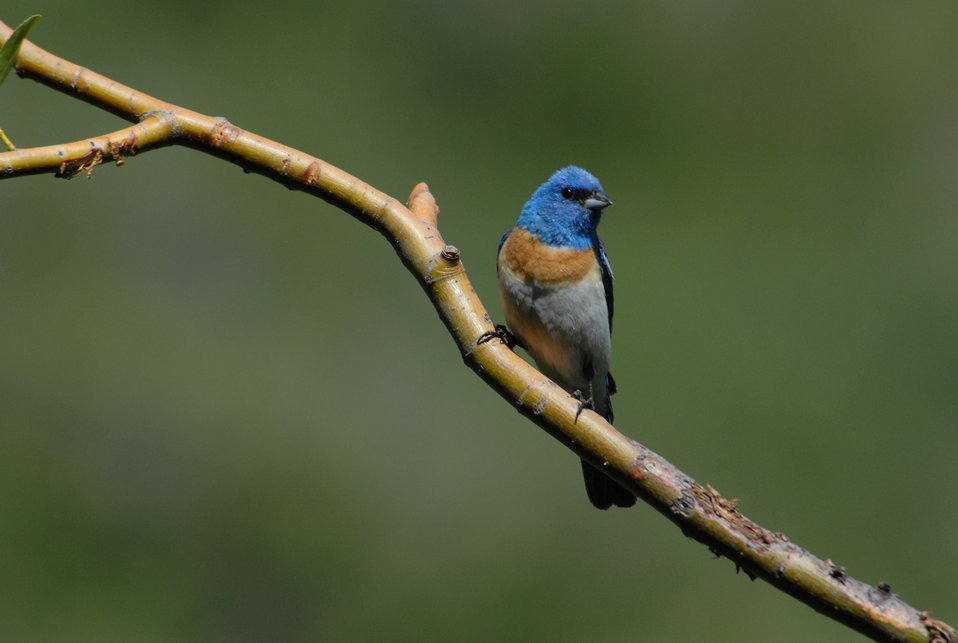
Lazuli Bunting

Male Lazuli Bunting perches on branch